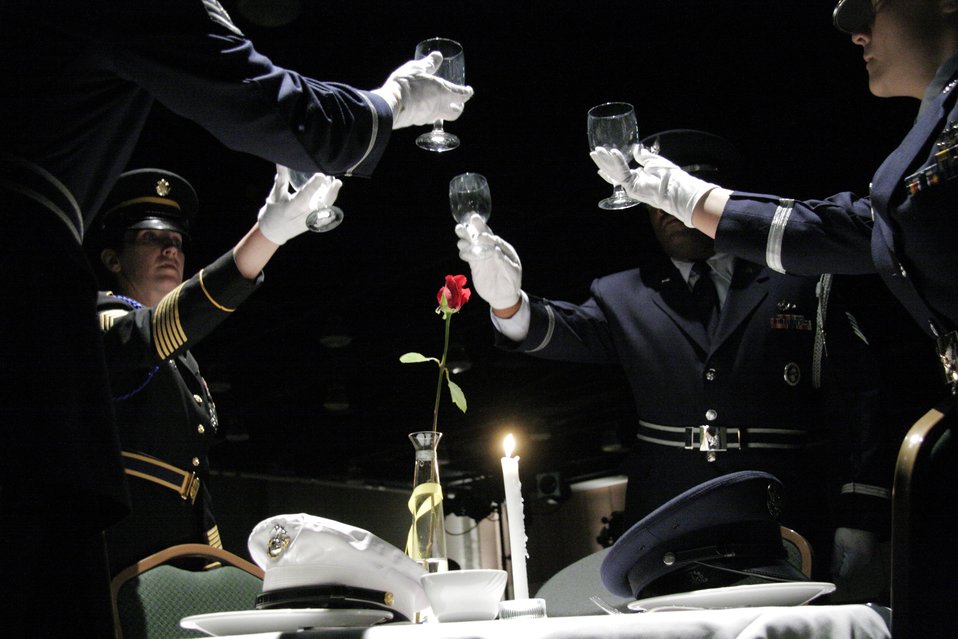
Oklahoma Military Ball

Members of the Governor's Color Guard perform the POW/MIA ceremony during the National Guard Association of Oklahoma's Military Ball in Oklahoma City on Saturday, April 22, 2006. More than 500 people attended the annual event.